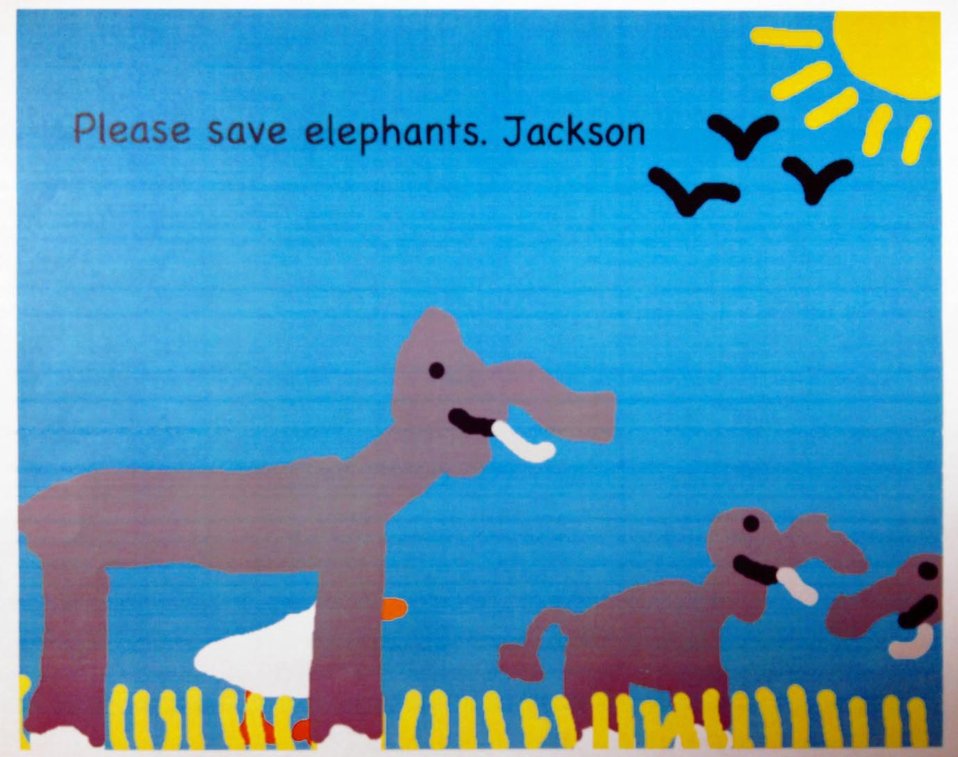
Drawing by Jackson